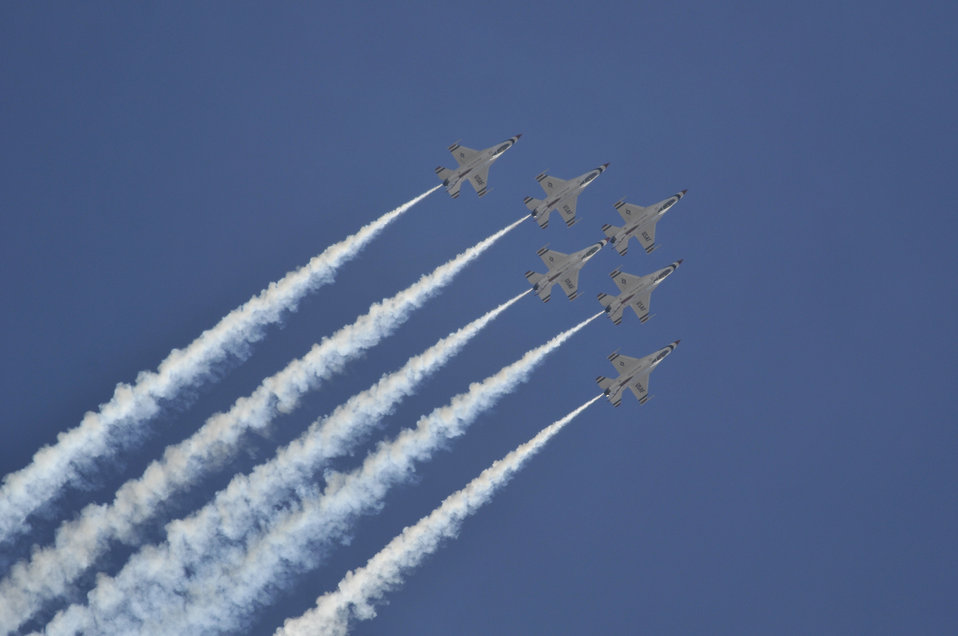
AirFest 2010

The U.S. Air Force air demonstration team, the Thunderbirds, perform precision aerial maneuvers Nov. 6, 2010, during AirFest 2010 at Lackland Air Force Base, Texas.